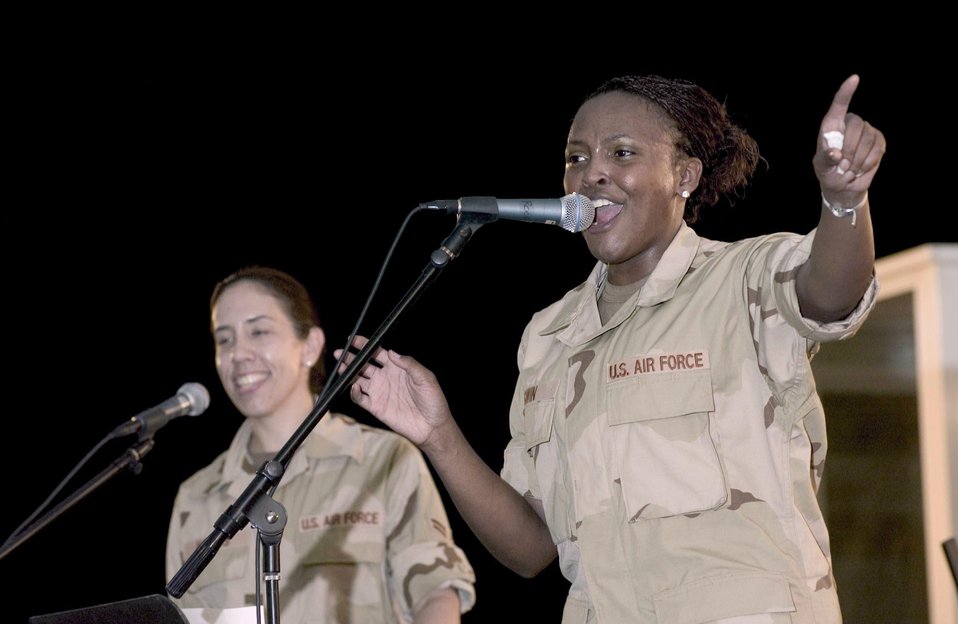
Sing, sing a song...

AL UDEID AIR BASE, Qatar -- Staff Sgt. Keisha Gwin (right) and Airman 1st Class Teresa Harris perform here with the Air Force's New Horizon Band. During the band's deployment, they are also touring bases in Kirkuk, Talil, Balad and Bagdad, Iraq. The band plays a variety of music and is stationed at Hanscom Air Force Base, Mass.